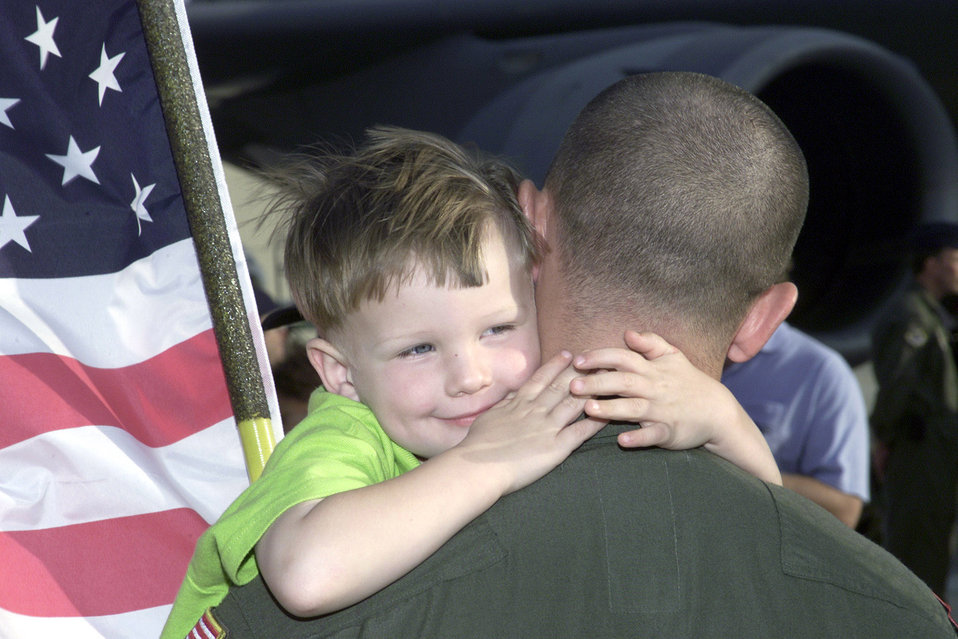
Big hug

MCGUIRE AIR FORCE BASE, N.J. -- Servicemembers from McGuire embrace loved ones as they return from a deployment in support of Operation Enduring Freedom on Nov. 2.